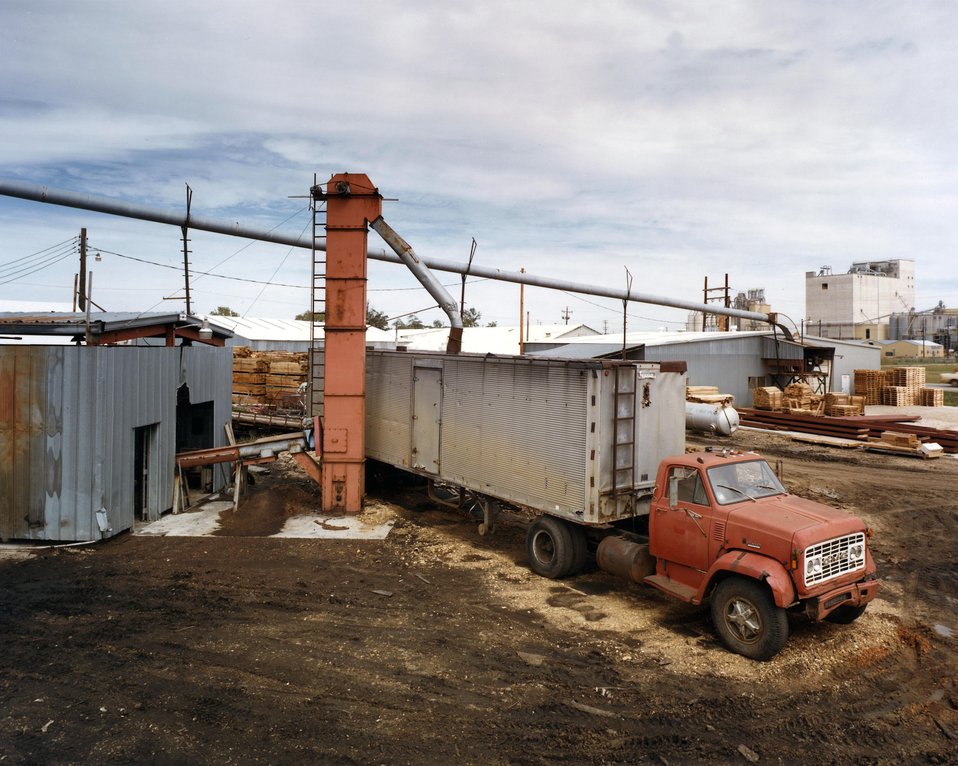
BUCKET ELEVATOR LOADING CHAR INTO THE TRACTOR TRAILER FOR TRANSPORT TO MARKET.

LOCALLY AVAILABLE BIOMASS, IN THIS CASE SAWDUST AND WOOD CHIPS FROM A PALLET MANUFACTURING PROCESS, IS PROCESSED TO PRODUCE MORE USABLE FORMS OF BIOMASS. THE PROCESS AT THIS PLANT PRODUCES CHARCOAL FOR MARKETING AND STEAM FOR A NEIGHBORING RICE PROCESSING PLANT.